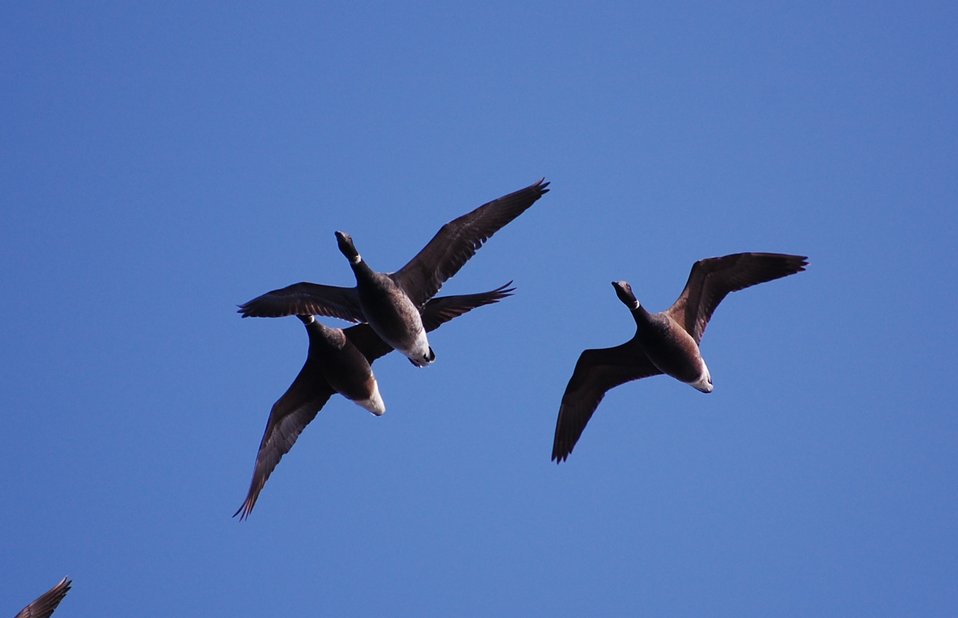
Brant at Izembek Lagoon

Izembek National Wildlife Refuge